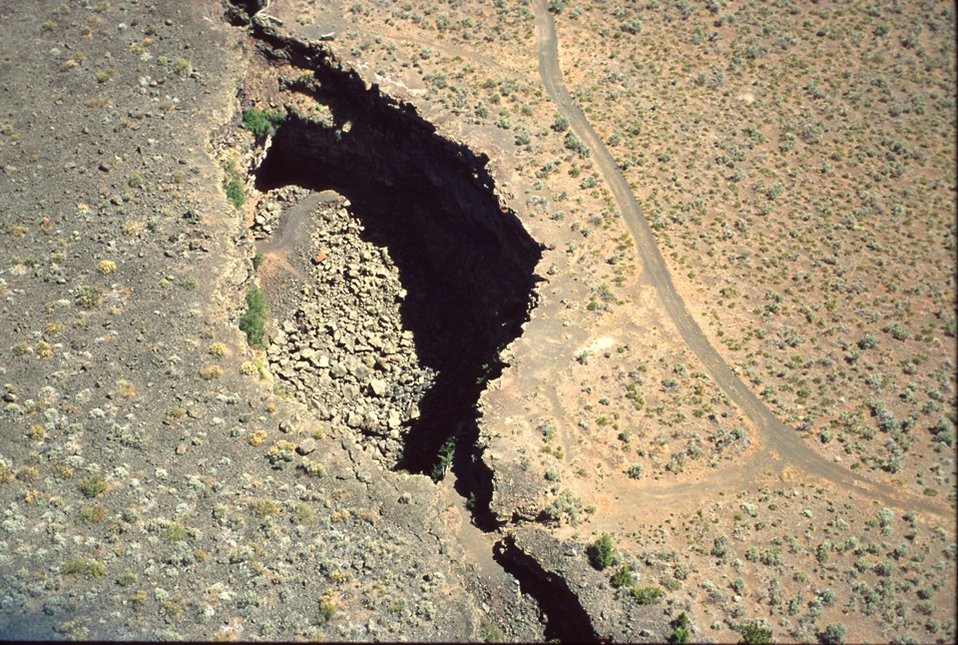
Shoshone Field Office USRD Upper Snake River District